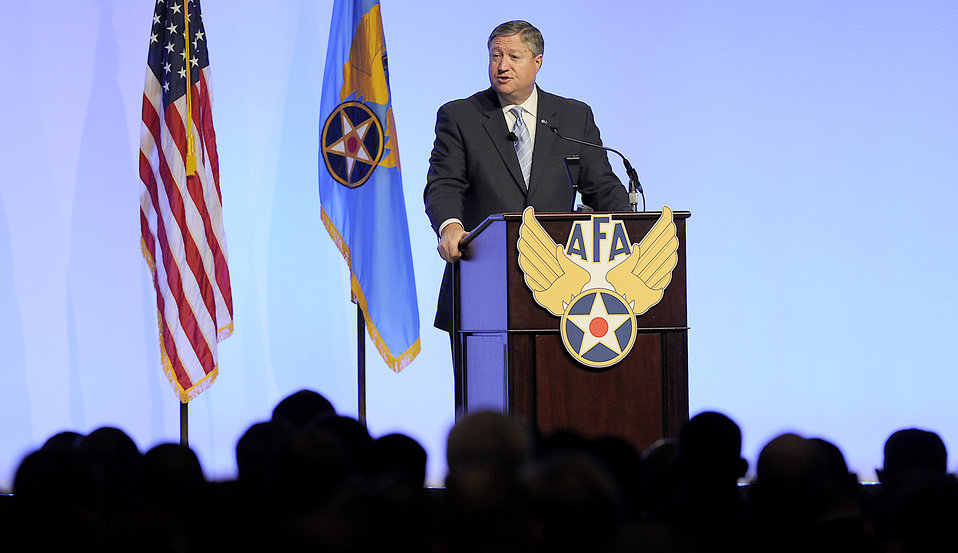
Secretary of the Air Force Micahel Donley

Secretary of the Air Force Michael Donley delivers remarks during the 2012 Air Force Association Air Warfare Symposium Feb. 24, 2012, in Orlando, Fla. In his speech, Donley addressed the importance of modernization in the Air Force's fiscal 13 budget proposal and out-year plans.